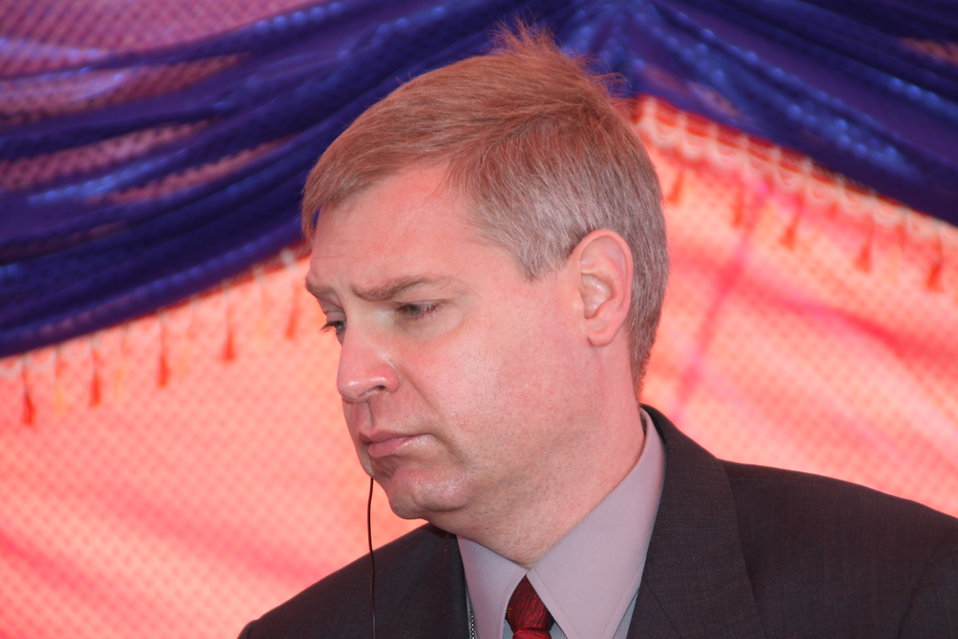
AVIPA Plus Wheat Seed Distribution 101005

US Ambassador Karl Eikenberry and USAID Acting Mission Director Kevin Brownawell joined the Minister of Agriculture, Irrigation and Livestock, H.E. Minister Mohammed Rahimi in signing a Memorandum of Understanding and distributing vouchers to area farmers for wheat and fertilizer.

US Ambassador Karl Eikenberry and USAID Acting Mission Director Kevin Brownawell joined the Minister of Agriculture, Irrigation and Livestock, H.E. Minister Mohammed Rahimi in signing a Memorandum of Understanding and distributing vouchers to area farmers for wheat and fertilizer.